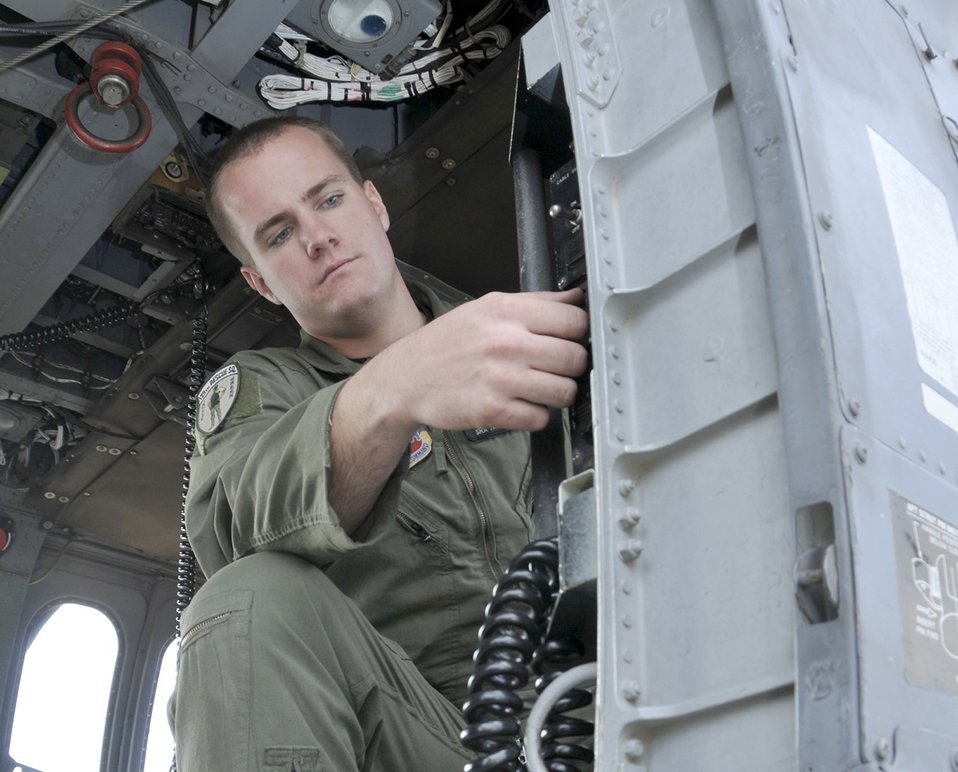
California Coast 'Guard'

Senior Airman Jacob Ellwood checks all systems as he readies a HH-60G Pave Hawk helicopter for a mission Nov. 6, 2010, at Moffett Federal Airfield, Calif. Airman Ellwood is a flight engineer assigned to the California Air National Guard's 129th Rescue Squadron.